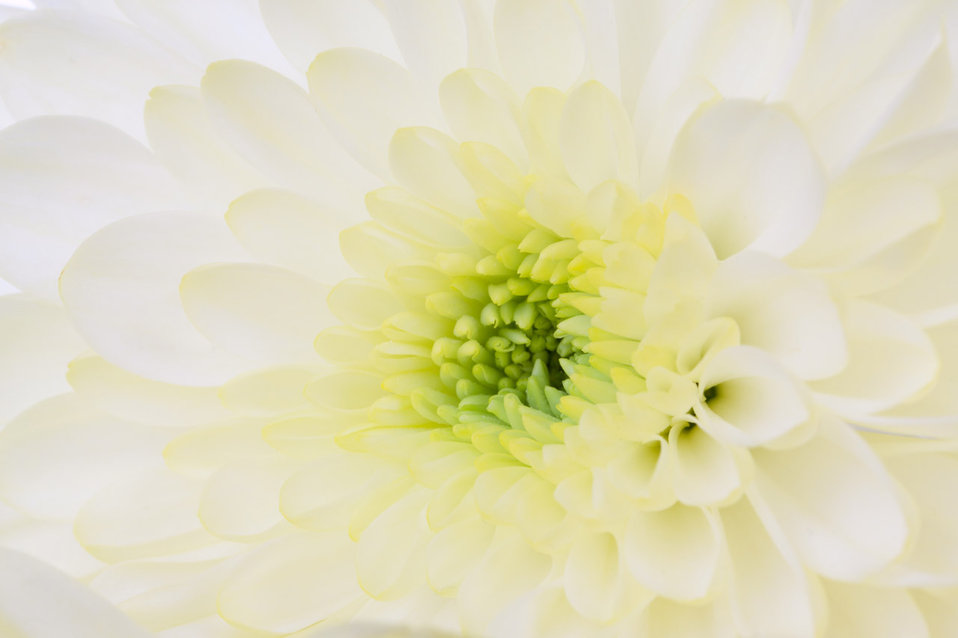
Macro flower

Detailed photo of a yellow dahlia flower.